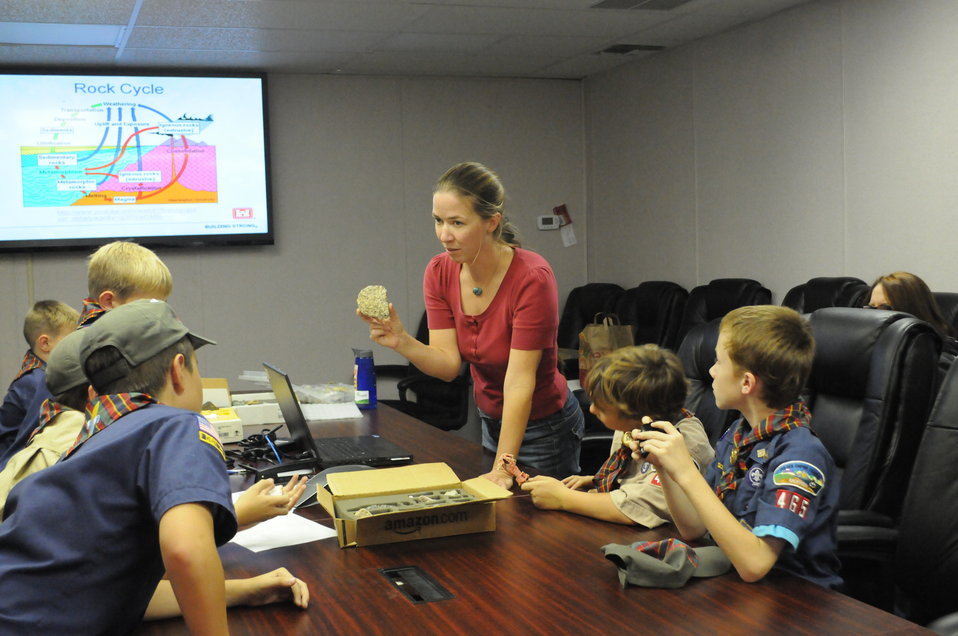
Cub Scouts Earn Geology Badge

Geologist Coralie Wilhite, of the U.S. Army Corps of Engineers Sacramento District, explains the phases of the rock cycle to Cub Scout Pack 465 to help them earn a geology merit badge in Folsom, Calif., Nov. 8, 2012.